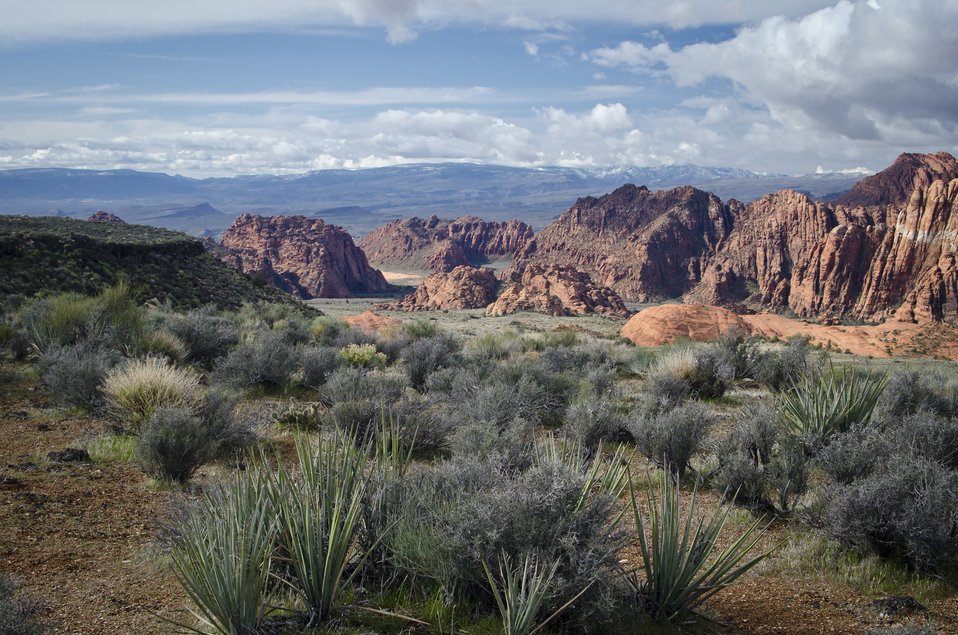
18th Place - Red Cliffs Desert Tortoise Reserve

The Red Cliffs Reserve is a 62,000-acre reserve established as part of the Washington County HCP. It is located adjacent to St. George, Utah and overlaps portions of Snow Canyon State Park

Credit: Larry Crist / USFWS

Photo Contest Entry #142